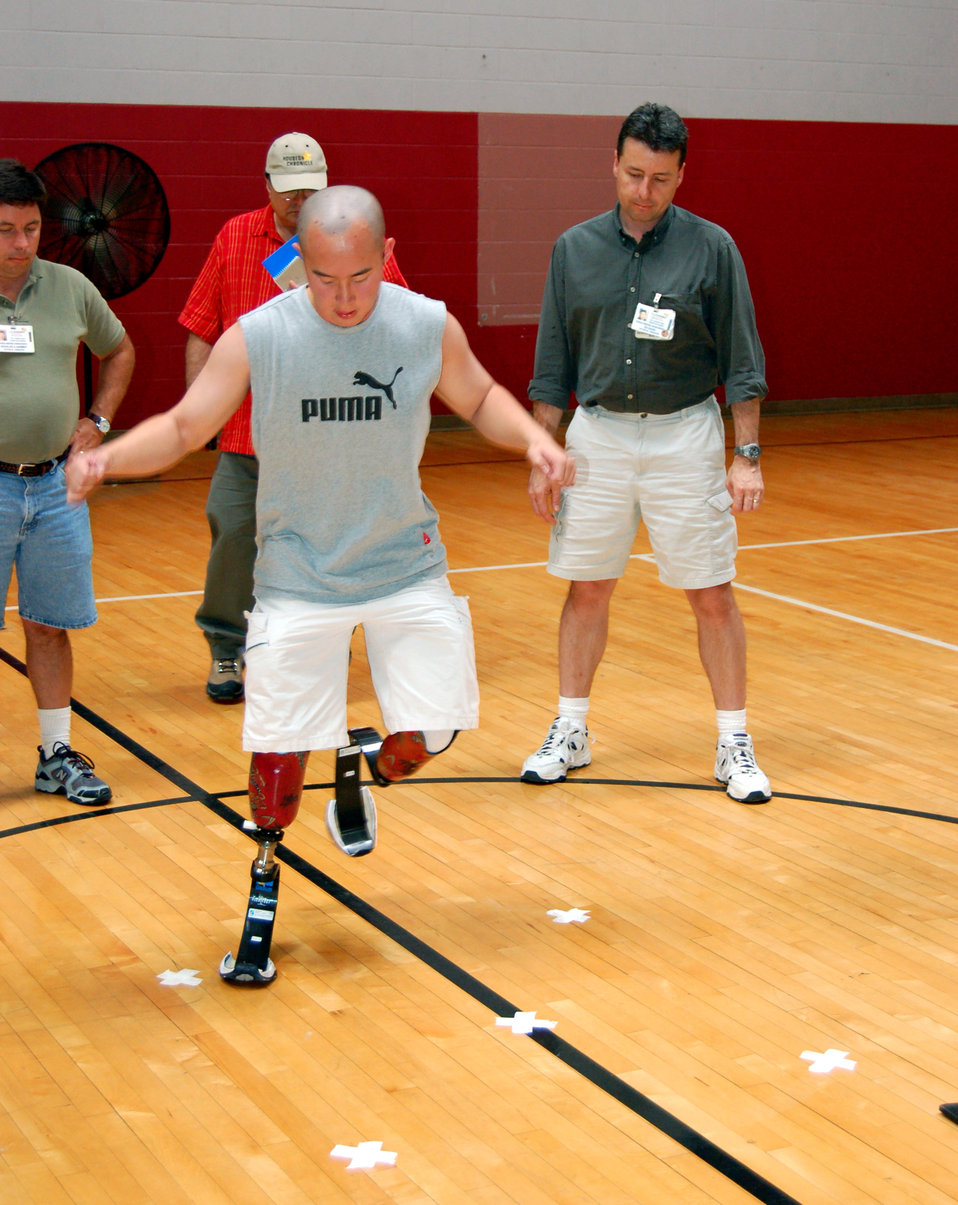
Amputees learning to run

Retired Army Sgt. Chang Wong demonstrates a balance and agility exercise for Veterans Affairs therapists and prosthetists during a military amputee advance skills training workshop at the Jimmy Brought Fitness Center on Fort Sam Houston, Texas, on May 12, 2006. The Brooke Army Medical Center hosted the workshop to train VA therapists in the needs of today's military amputees.